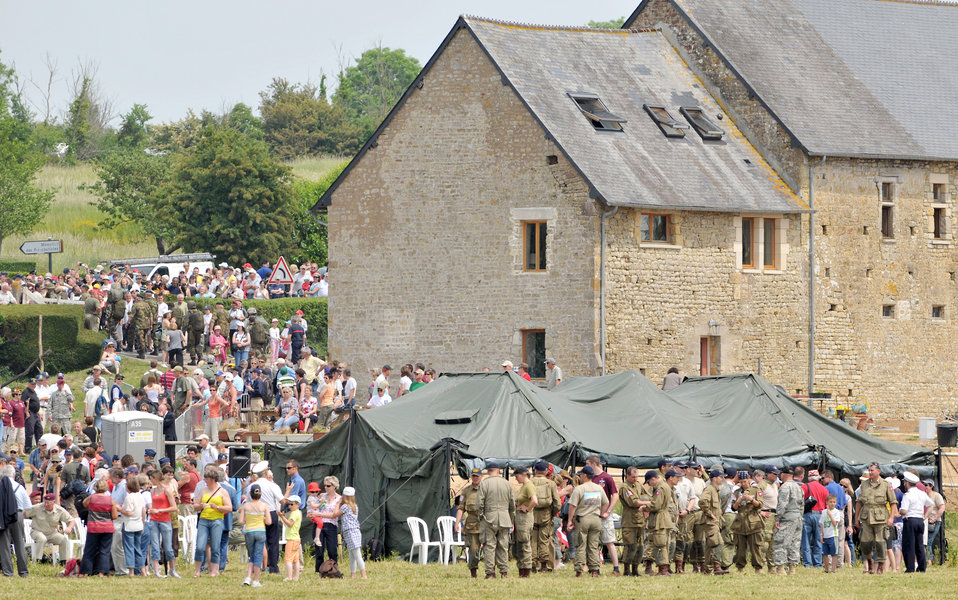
Airmen commemorate D-Day

A crowd of spectators gathers to watch multinational paratroopers jump into the famous